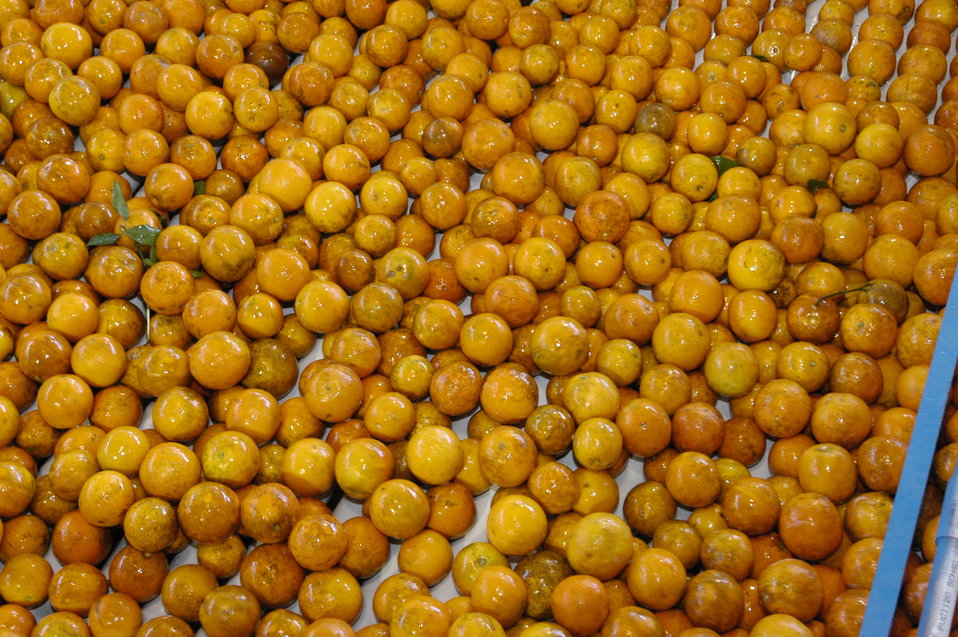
Oranges are processed at the Seald Sweet processing plant in Vero Beach, Florida on February 10, 2006. A trailer load of oranges is weighed on scales in order to determine the weight of fruit received, which will be used to base the payment to the grower. The oranges are unloaded onto a conveyor belt and from this belt the Florida Department of Agriculture and Consumer Services (FDACS) takes a representative sample to test it for juice content, maturity, and to certify the pounds solids per box (the unit that growers' payment is based upon). The fruit is then diverted to storage bins labeled according to the juice specification as determined by FDACS. The fruit is conveyed by belt through a washing process and enters the processing plant where it is graded for bad or damaged fruit. The fruit is then separated by size and sent to the juice extractors. Before juicing, the peel is pricked to extract the oils found in the peel and then the juice is extracted.